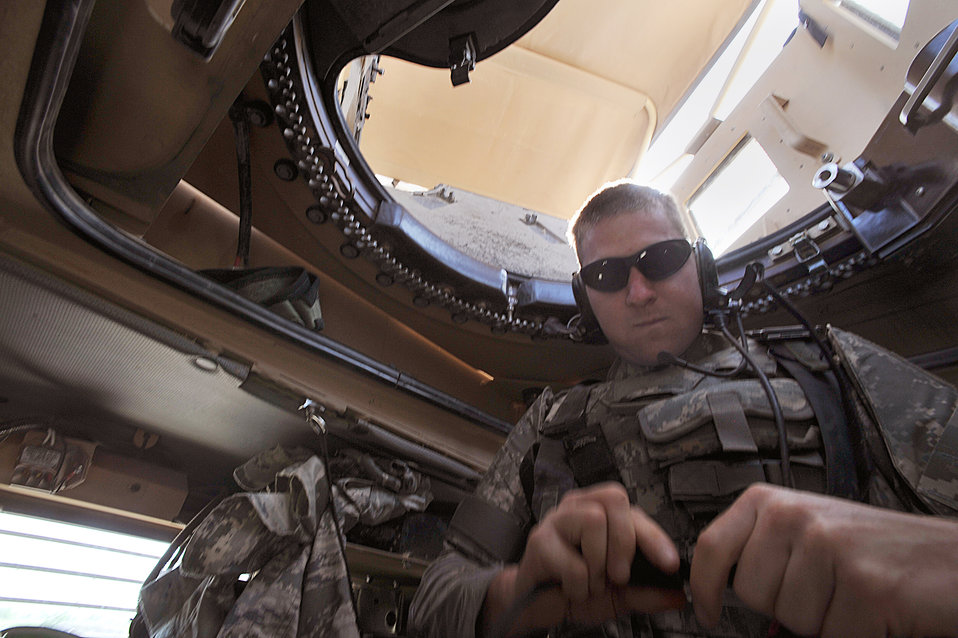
Airmen, Soldiers perform patrol

Airman 1st Class Andrew Koss checks the connection to his headset in a mine-resistant, ambush-protected vehicle before a joint patrol with the Soldiers April 14, 2010, at Joint Base Balad, Iraq. Airman Koss is from the 532nd Expeditionary Security Forces Squadron deployed from Eielson Air Force Base, Alaska.